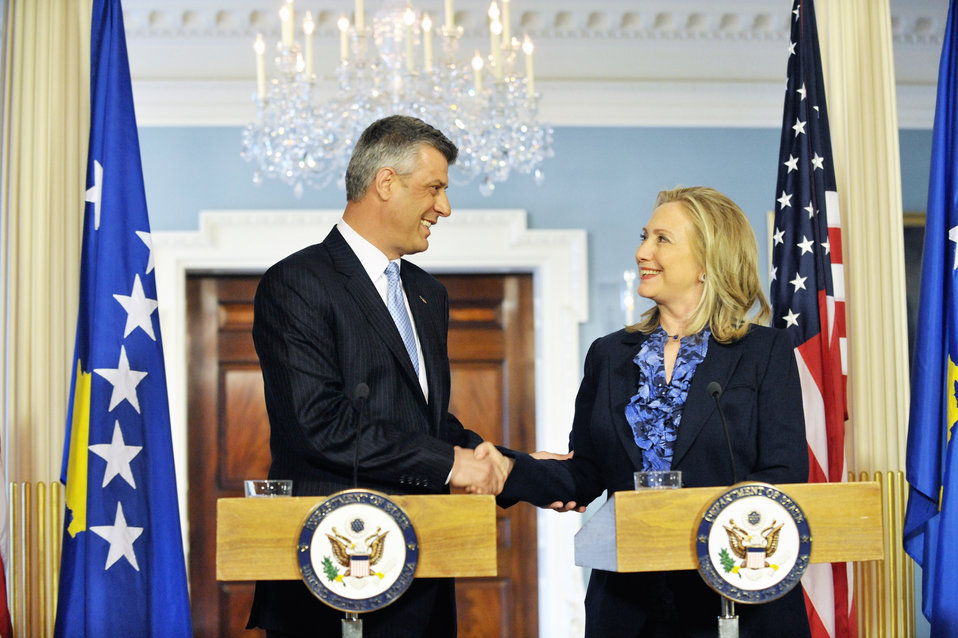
Secretary Clinton Meets With Kosovan Prime Minister Thaci

U.S. Secretary of State Hillary Rodham Clinton meets with Kosovan Prime Minister Hashim Thaci at the U.S. Department of State in Washington, D.C., on April 4, 2012.